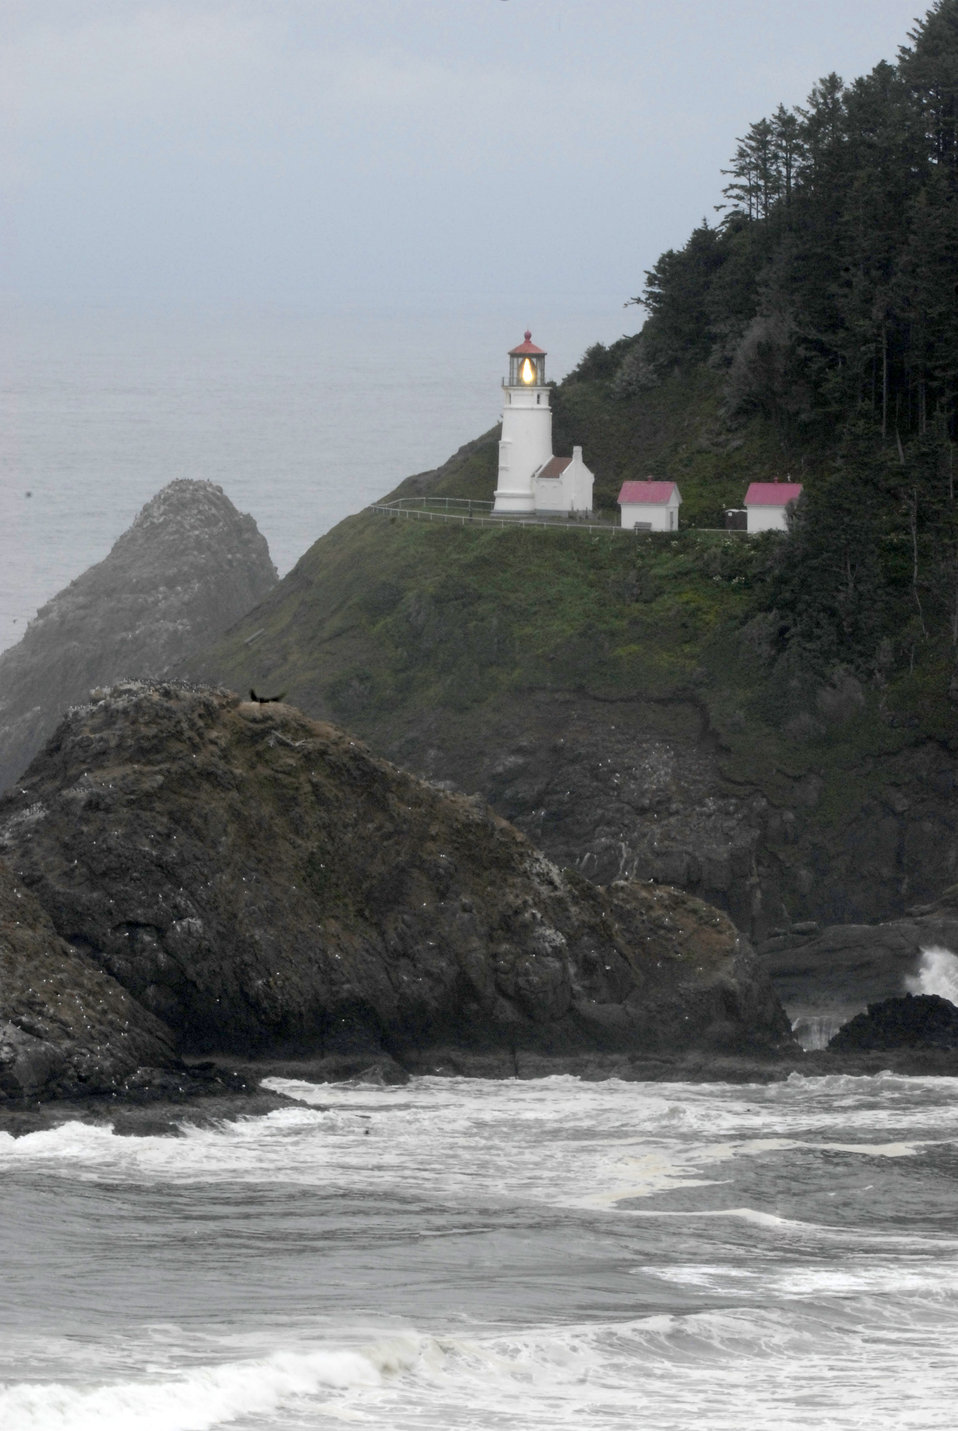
Haceta Point lighthouse sits on a bluff 150 feet above the sea along Oregon’s coast on June 11, 2008. The lighthouse tower is 56 feet tall and has the most powerful light along the coast and the light can be seen 21 miles out to sea and is only stopped by the curvature of the earth.